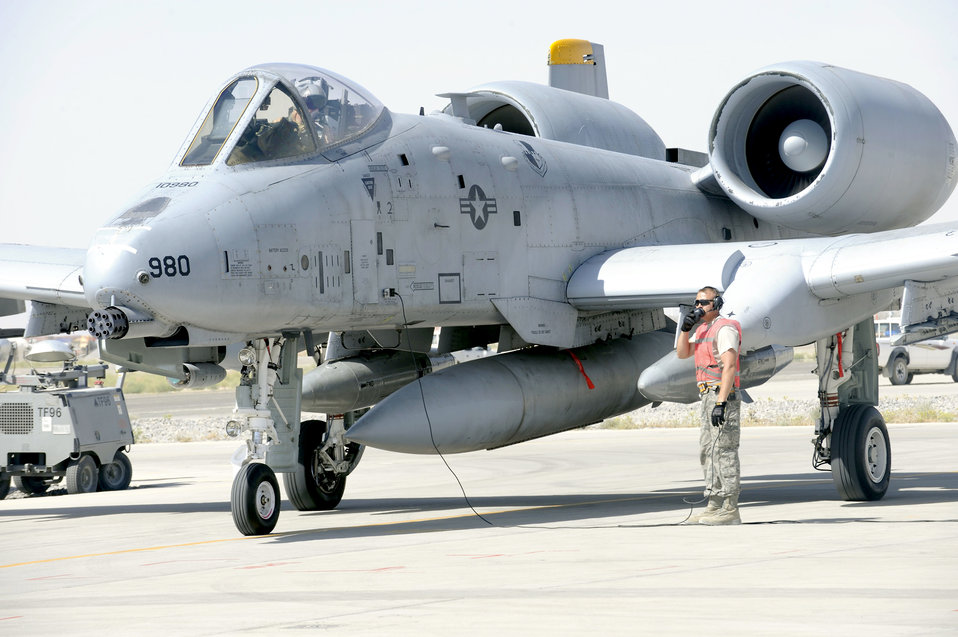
A-10 Thunderbolt II post-flight check

An Airman from the 81st Expeditionary Aircraft Maintenance Squadron relays information to an A-10 Thunderbolt II pilot May 11, 2010, at Kandahar Airfield, Afghanistan. Within a two week period a total of 12 jets arrived on Kandahar Airfield.